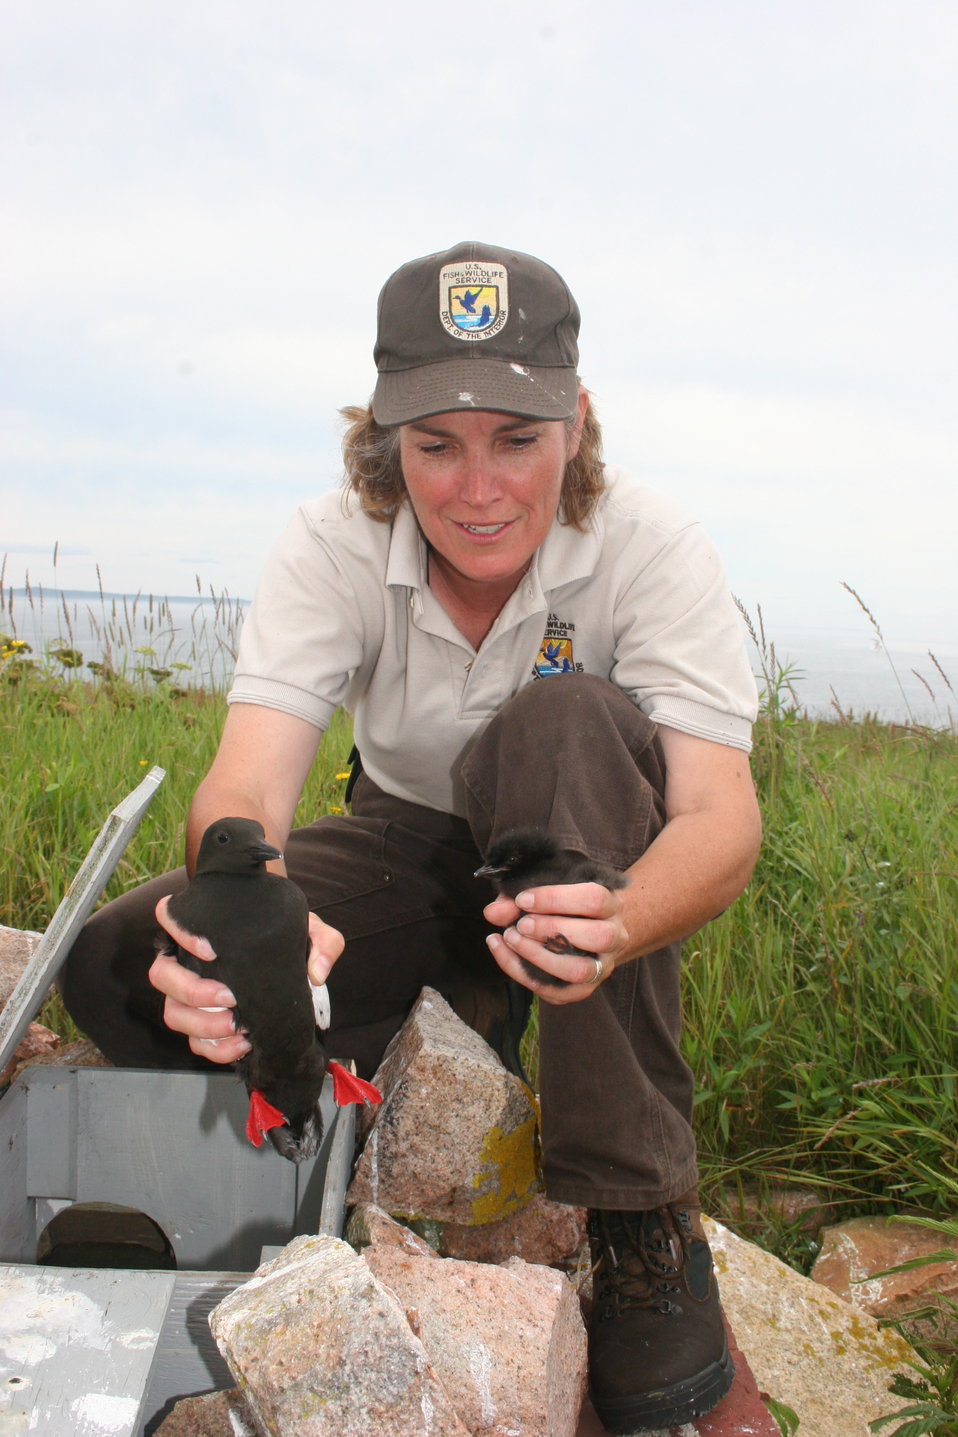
FWS Holding Razorbills